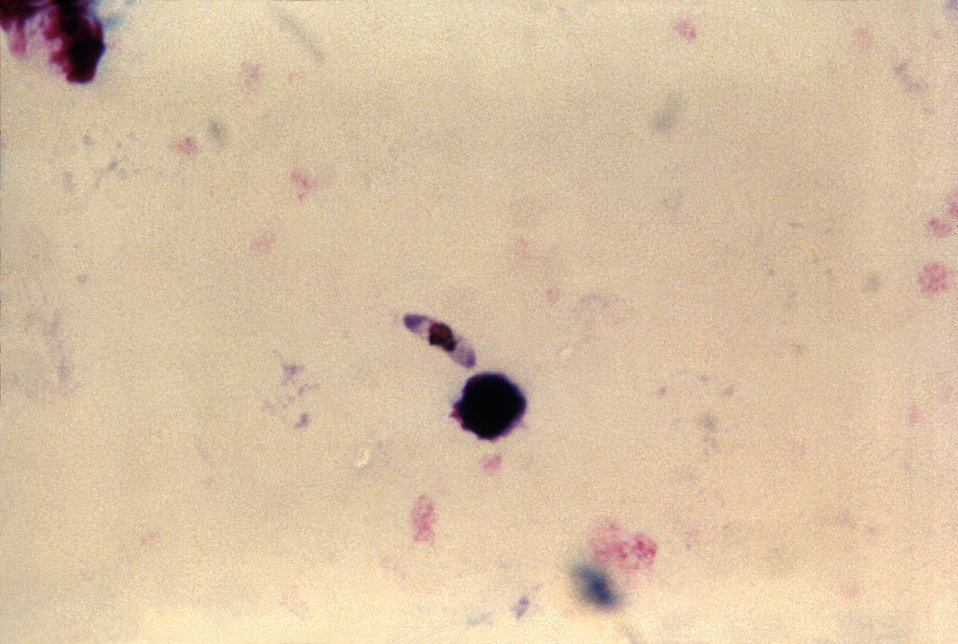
This thick film Giemsa stained micrograph reveals a P. falciparum gametocyte (Cntr).